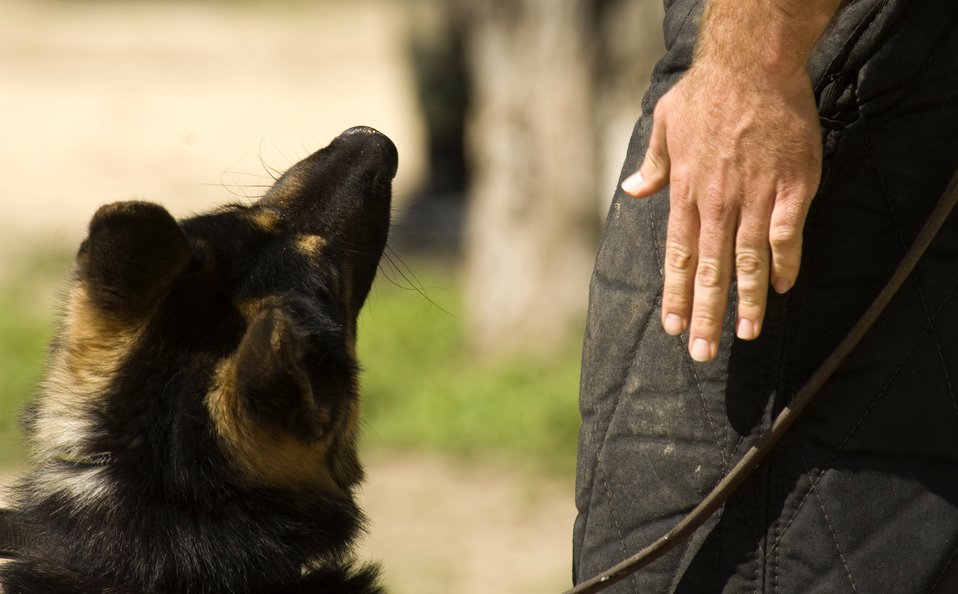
Canine Boot Camp: Instructors bark orders, recruits respond in kind

Both verbal and nonverbal commands are used to train military working dogs at the 341st Training Squadron at Lackland Air Force Base, Texas. More than 1,300 dogs DOD-wide are trained here for patrol and bomb/drug detection in the field.